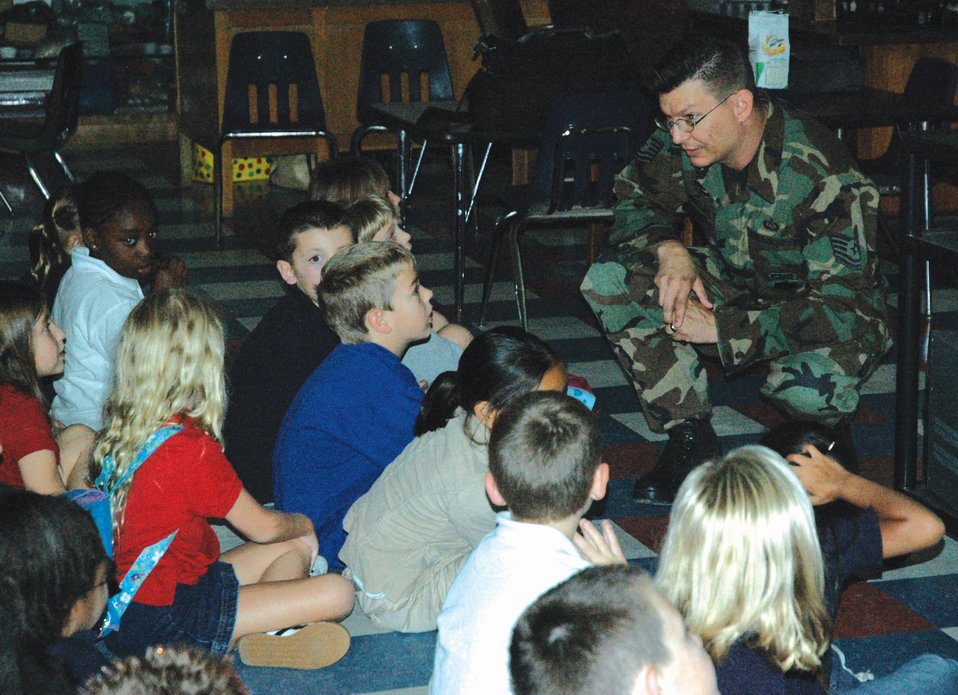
Forecaster shares love of weather with students

Tech. Sgt. Publio Casillas answers individual students' questions after his presentation on weather Sept. 28 at Tyndall Elementary School in Florida. Sergeant Casillas is the NCO in charge of the 325th Operations Support Squadron Weather Flight mission services element at Tyndall Air Force Base, Fla.